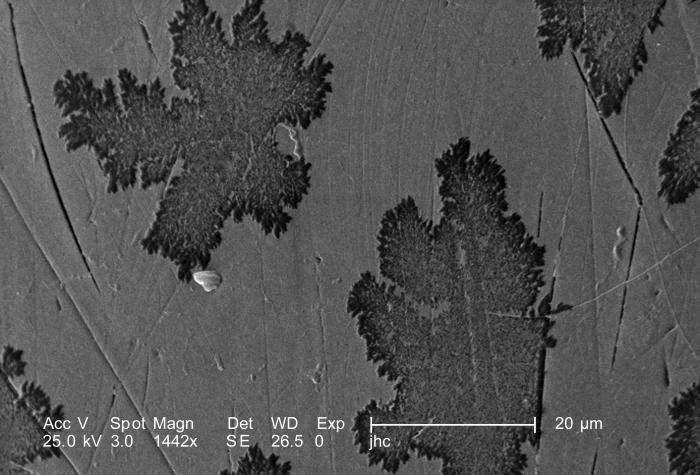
Magnified 1442X, twice that of PHIL 9950 and 9951, this scanning electron micrograph (SEM) revealed some of the ultrastructural details found on the surface of one of the two eyes of this adult 'figeater' beetle, Cotinis mutabilis. The meaning behind the 'leaf-like' pattern seen on the eye's chitinous surface is unknown, however, when carefully scrutinized, it does not appear to be randomized.